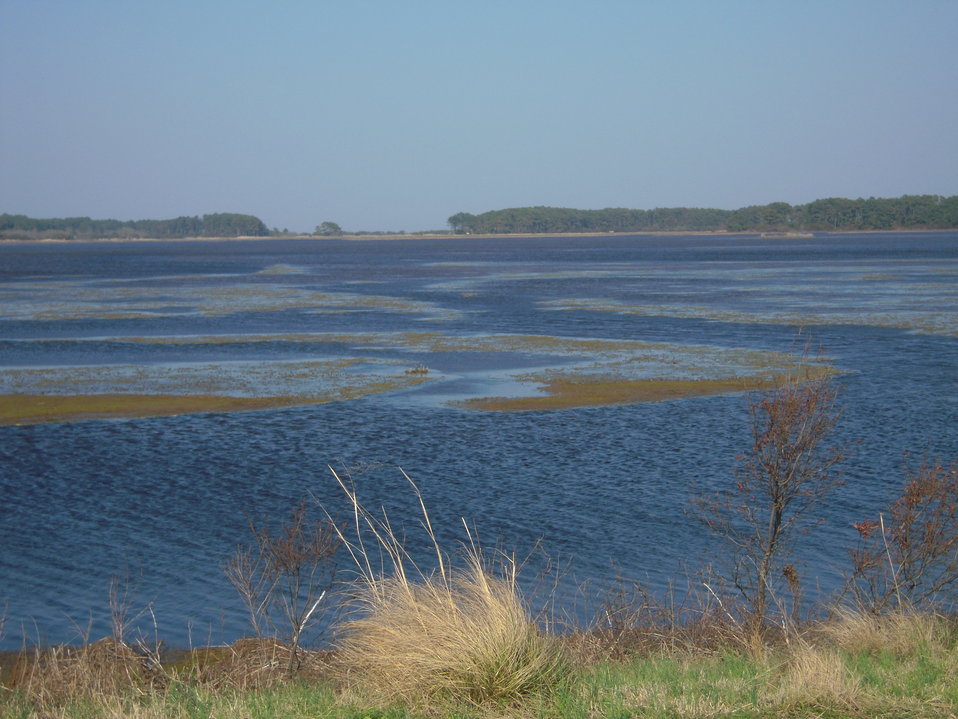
Marsh at Chincoteague National Wildlife Refuge, located at the southern end of Assateague Island, Virginia.